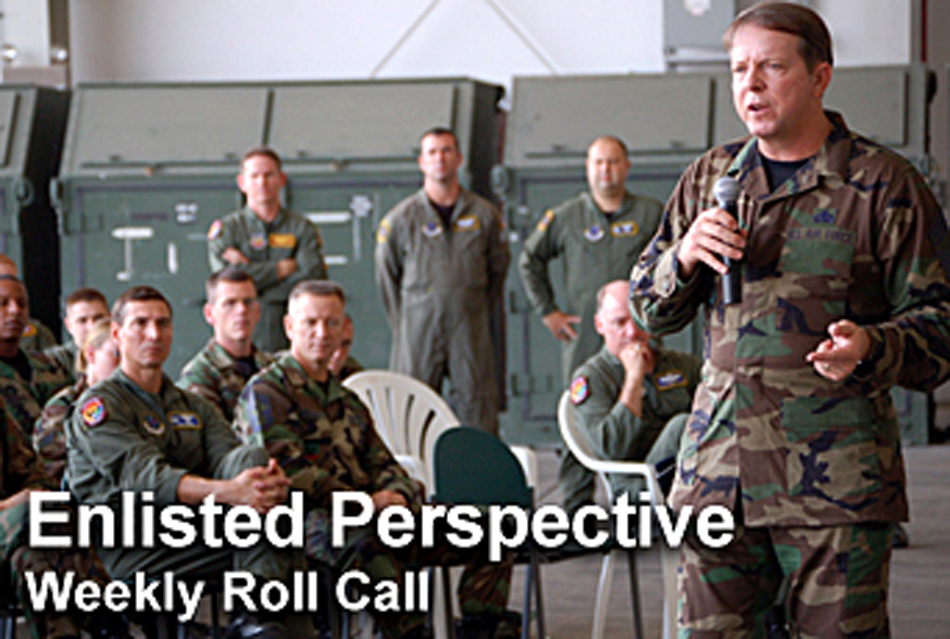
Chief's perspective focuses on Roll Call

The new Roll Call program is the focus of the latest Enlisted Perspective by Chief Master Sgt. of the Air Force Rodney J. McKinley.